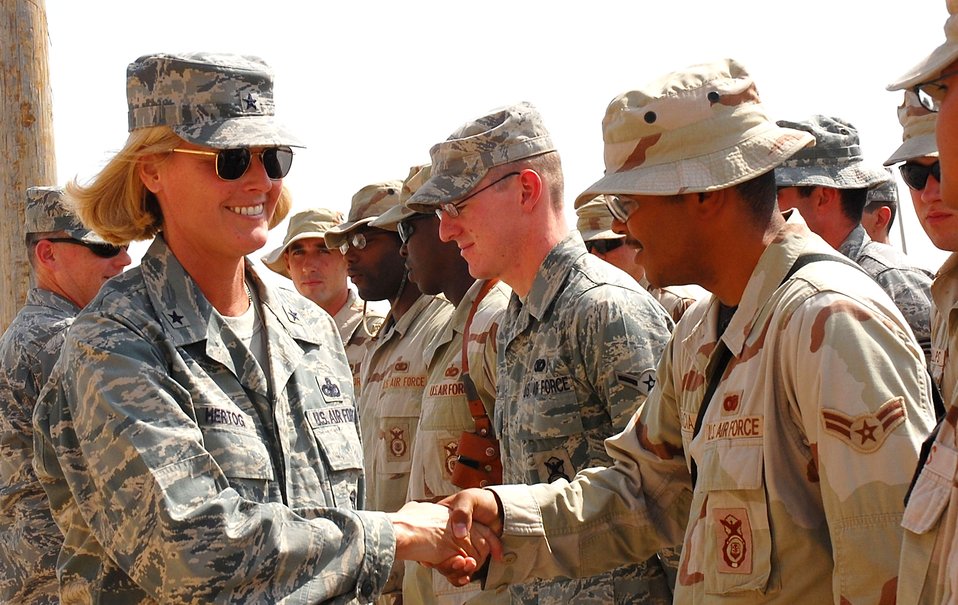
Top Cop visits deployed Airmen

Brig. Gen. Mary Kay Hertog visits with deployed Airmen to discussed deployment tempos, training and the future of the career field Oct. 10 at Camp Bucca, Iraq. General Hertog is the Air Force Security Forces director.